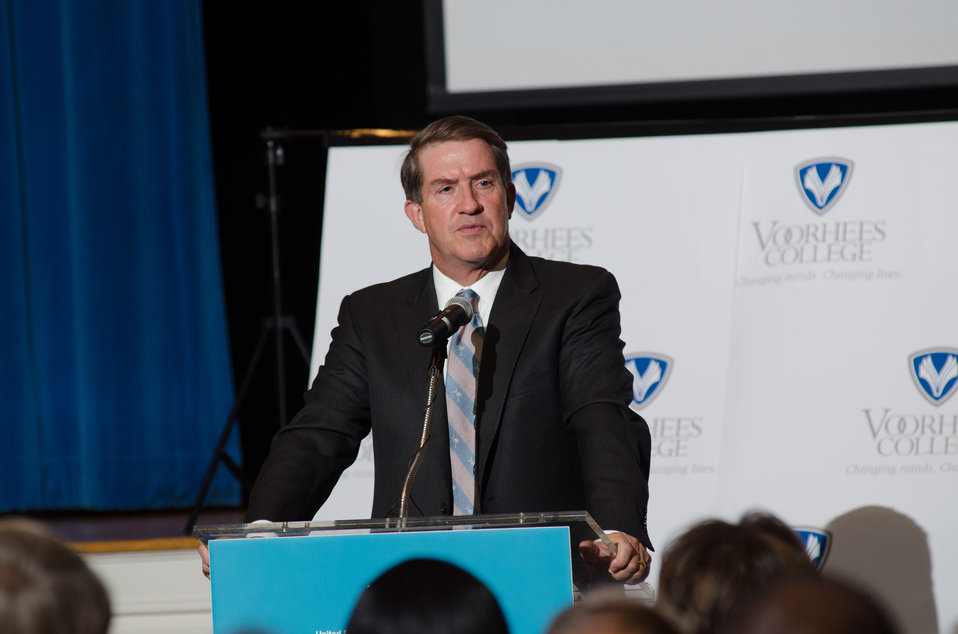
South Carolina Commissioner of Agriculture Hugh Weathers speaking at the U.S. Department of Agriculture's (USDA) Strike Force for Rural Growth and Opportunity event held at Voorhees College in Denmark, SC, on Tuesday, March 26, 2013.